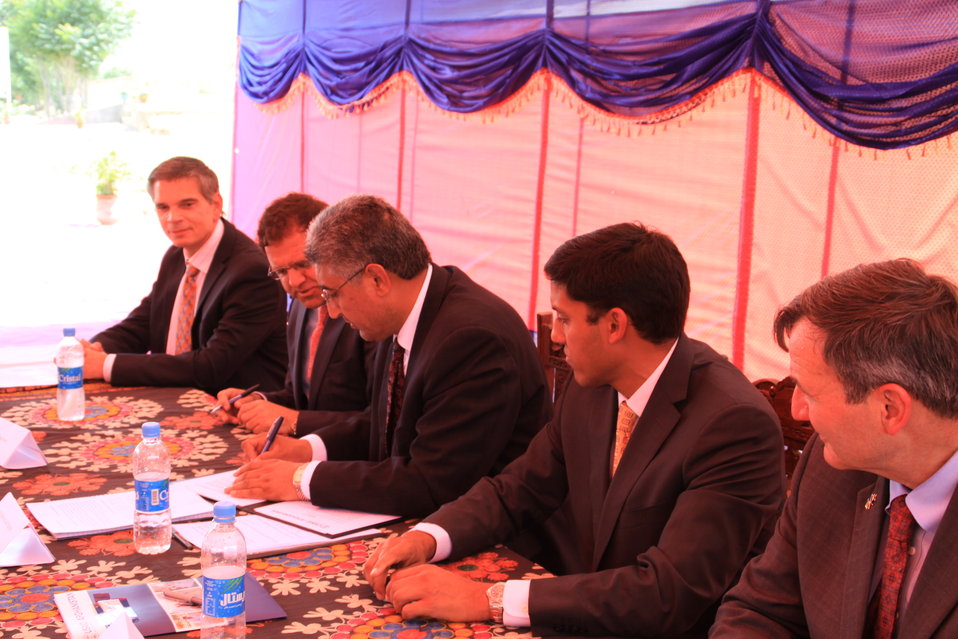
Badam Bagh Farm